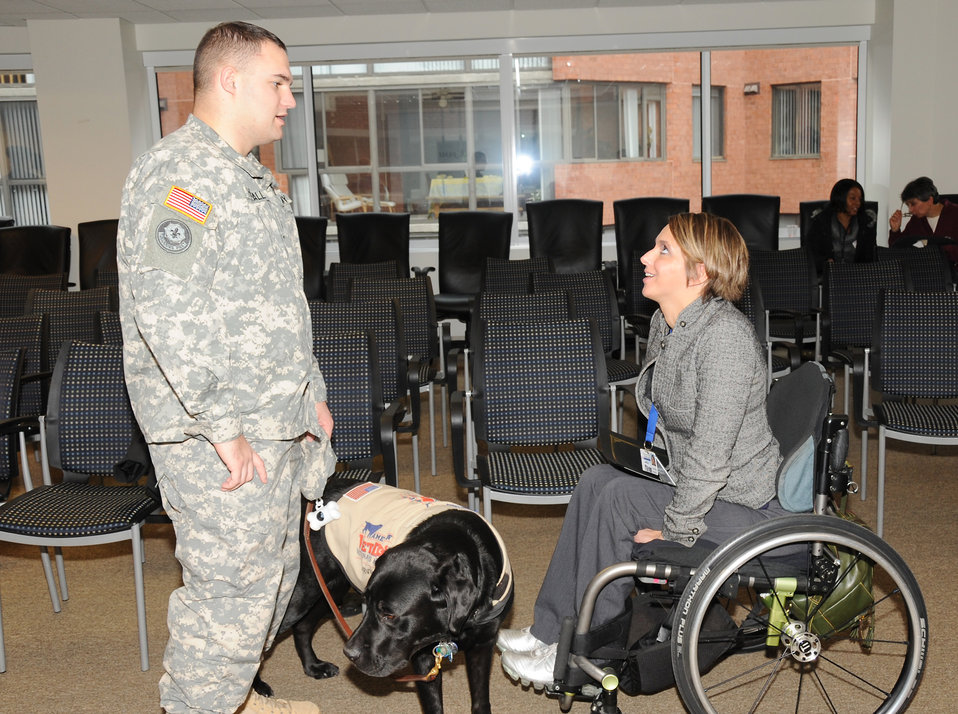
Honoring and Celebrating our Veterans

11.07.2012 Employees gathered in the Arlington Office to honor FWS Veterans